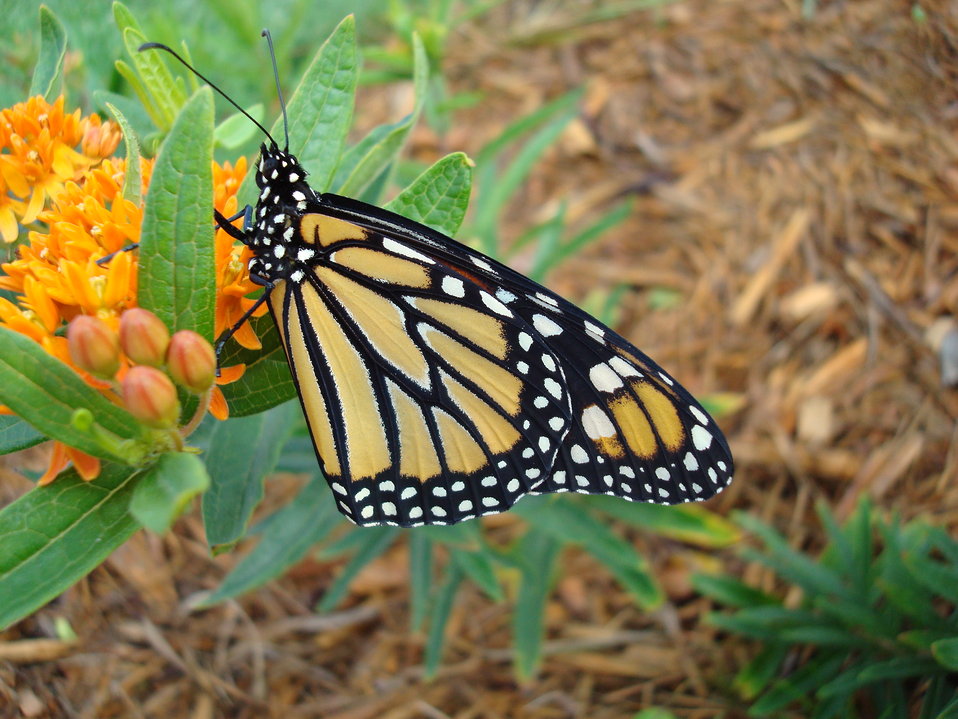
Pollinator 2

This is a close up view of a Monarch butterfly on a butterfly weed plant. Monarchs and caterpillars are regulars at the Cranberry Mountain Nature Center Native Plant and Pollinator Garden in Richwood, WV.